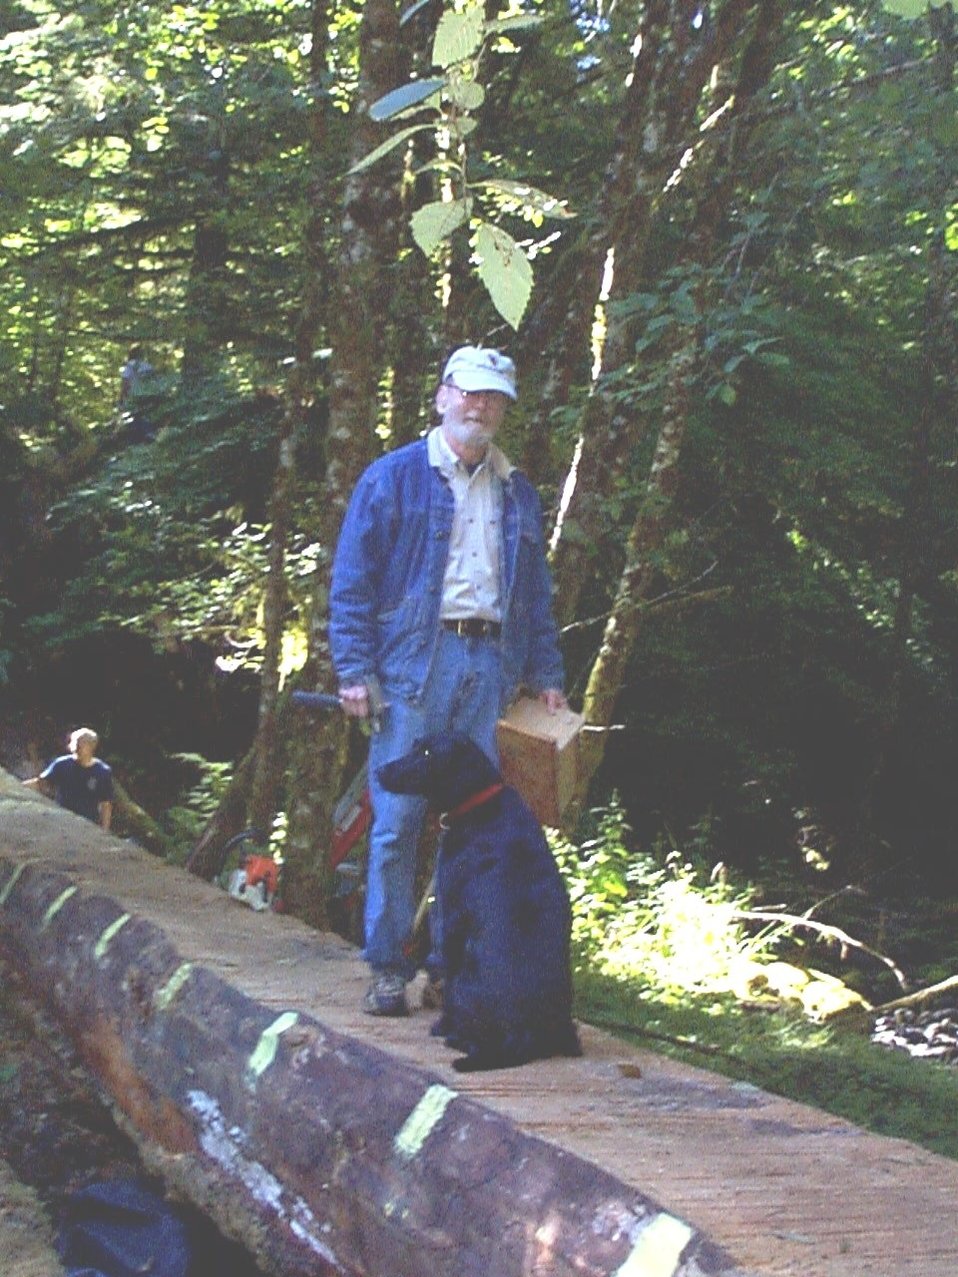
Volunteers installed bird boxes a the at McGowen Creek.